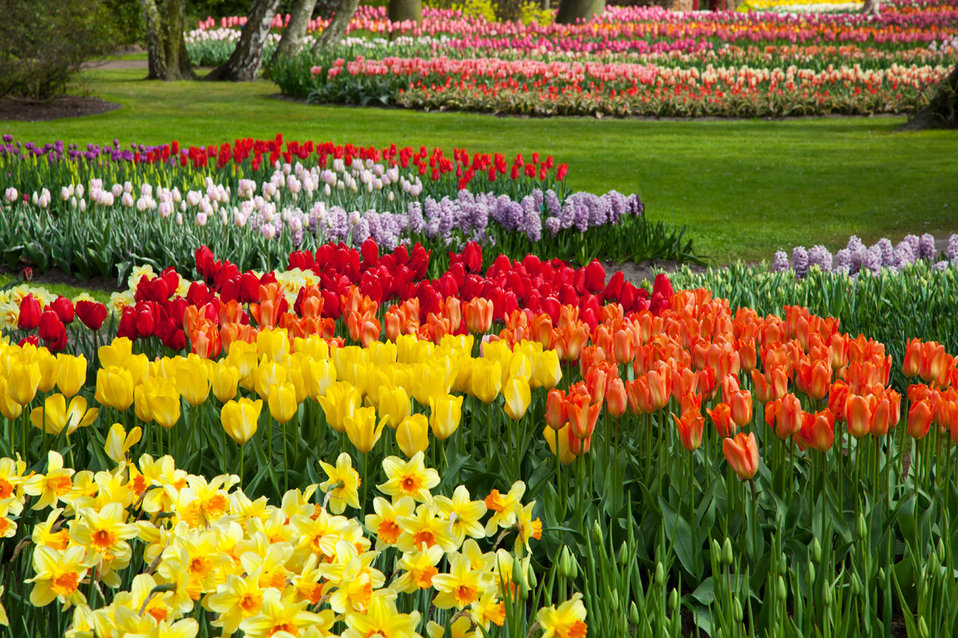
Colorful flower beds in keukenhof gardens.